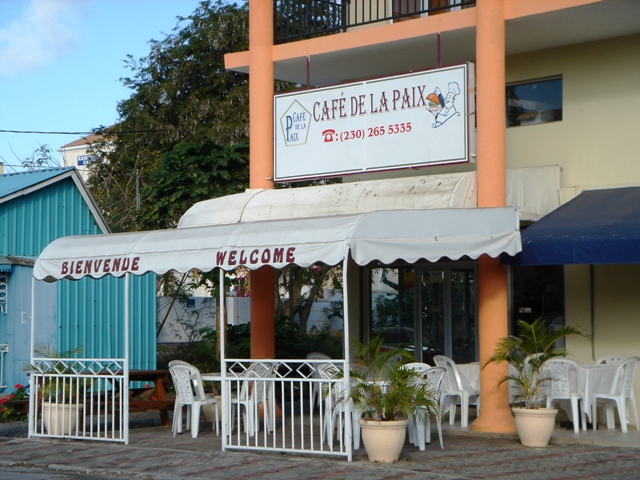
en: Café de la Paix ja:カフェ・ド・ラ・パイス Taken by (WT-shared) Shoestring in September, 2006 Location: Mont Choisy